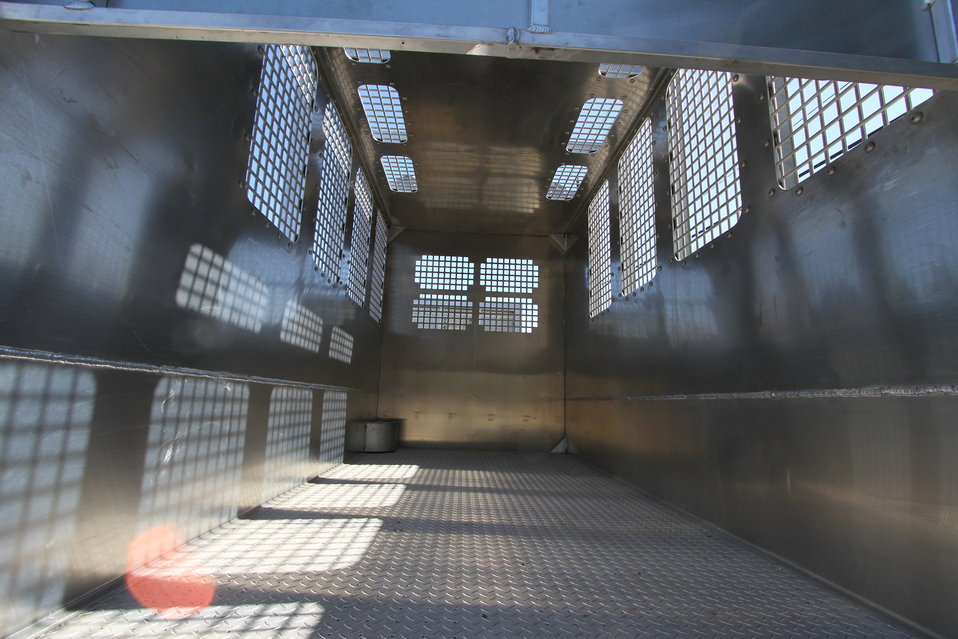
Polar bear holding module being set up at the Alaska Zoo before being shipped north. USFWS/Katrina Mueller